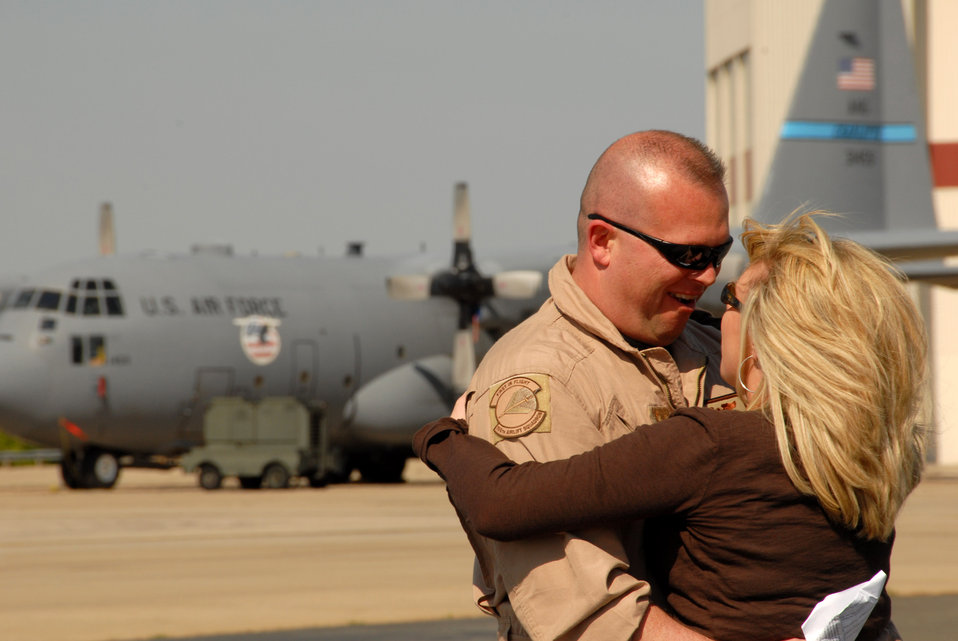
Nothing can be finer than to be in Carolina

Master Sgt. David Lee hugs his girlfriend, Crystie Wilkins, as he arrives back home April 6 from supporting Operation Enduring Freedom to Charlotte, N.C. Sergeant Lee is a C-130 Hercules loadmaster assigned to the 145th Airlift Wing for the North Carolina Air National Guard. He and his unit were deployed in Afghanistan.